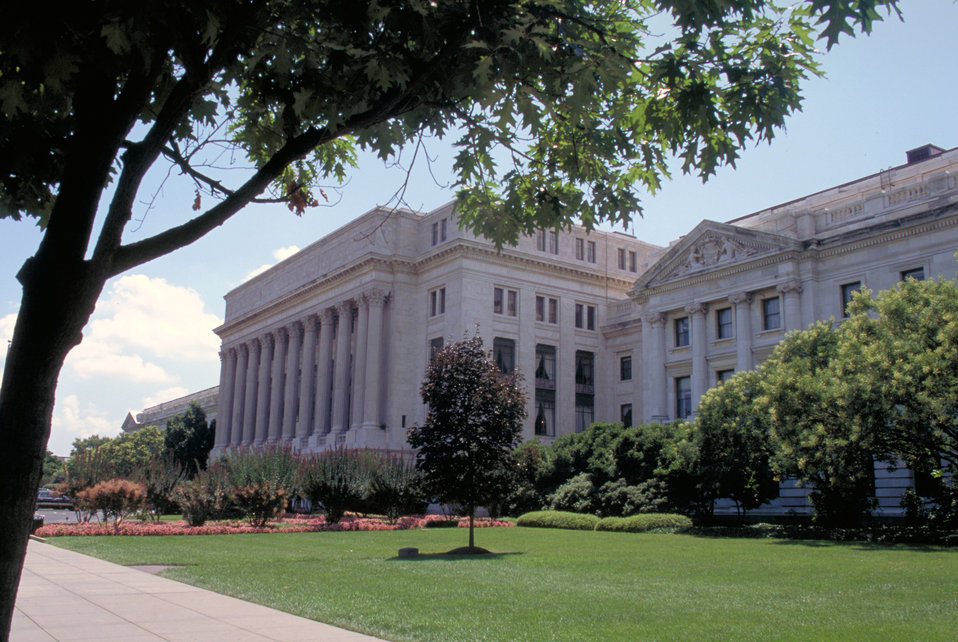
The Jamie L. Whitten, Federal Building, U.S. Department of Agriculture in Washington, D.C.